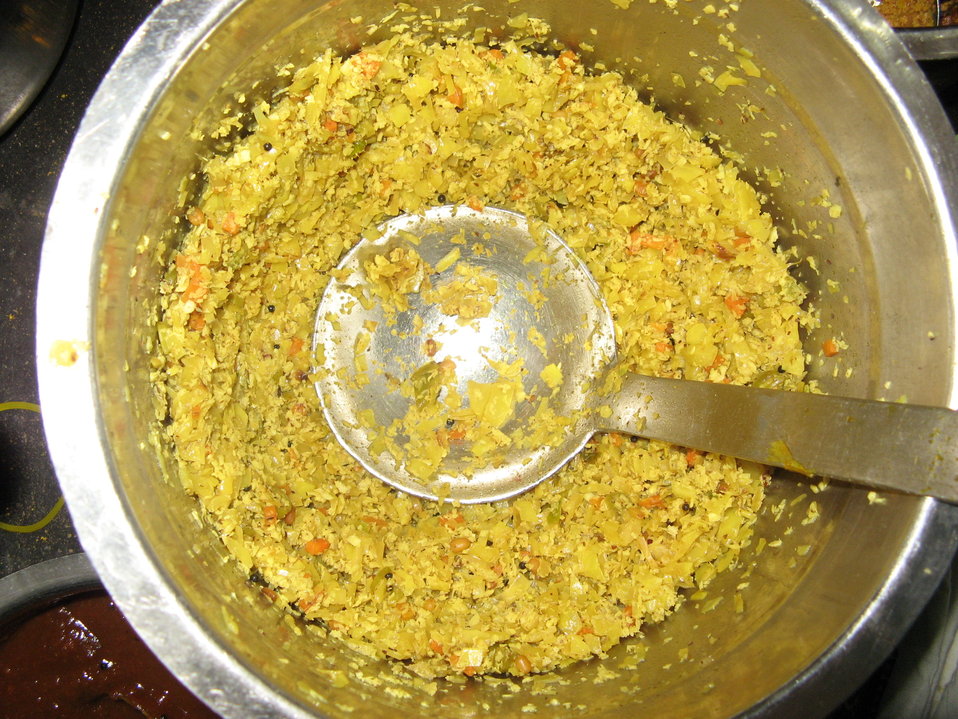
മലയാളം: കാബേജ് തോരൻ